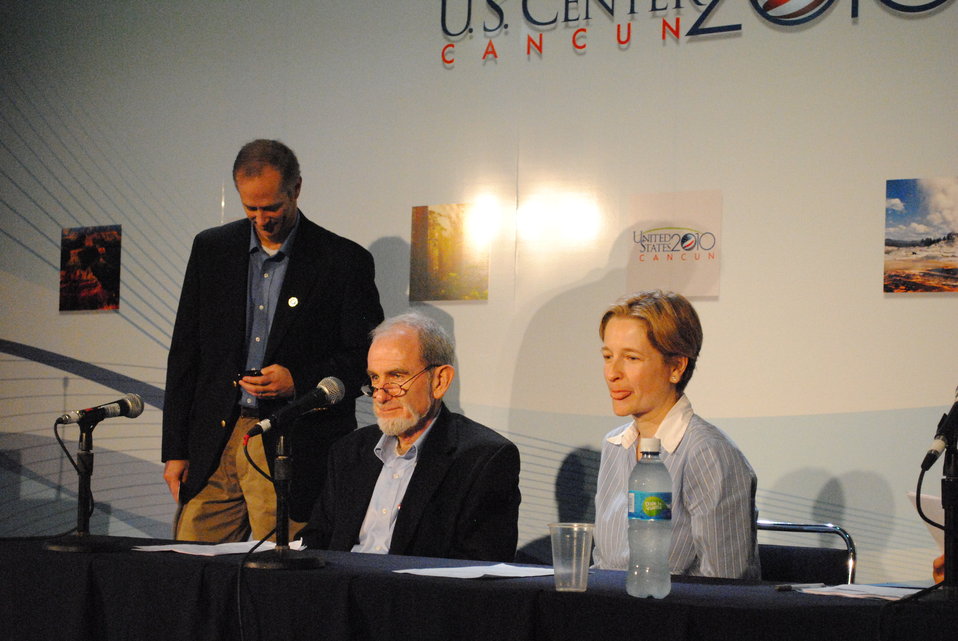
Jacqueline Cochran and Fellow Panelists Respond to Questions

Panelists of the 'Open EI Platform' side event respond to questions at the U.S. Center at COP-16 in Cancun, Mexico, on December 1, 2010.